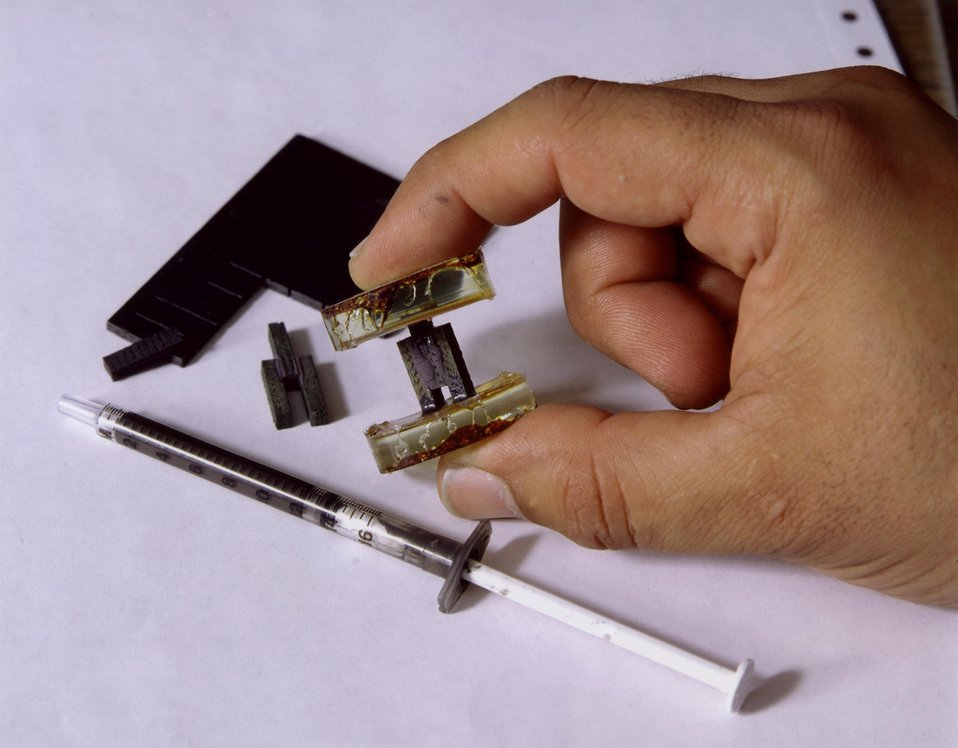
THREE PIECES OF SILICON CARBIDE COMPOSITES GLUED TOGETHER WITH PLASTIC DISCS AT THE ENDS.

THE SMALL PLATFORMS USED TO SUPPORT THE SCIENTISTS IN THE FIRST PHOTO CONSIST OF THREE PIECES OF SILICON CARBIDE COMPOSITES GLUED TOGETHER, WITH PLASTIC DISCS AT THE ENDS. SEVEN SUCH PLATFORMS WERE USED TO SUPPORT THE WEIGHT OF THE MEN SHOWN. SCIENTISTS HOPE THIS SIMPLE, EFFECTIVE GLUING METHOD WILL PROMPT INDUSTRY TO MAKE GREATER USE OF SPECIAL CERAMIC COMPOSITES IN HIGH TEMPERATURE SETTINGS. THESE COMPOSITES HAVE PROPERTIES THAT, IN SOME APPLICATIONS, MAKE THEM SUPERIOR TO STEEL AND SUPER ALLOYS BECAUSE THEY CAN WITHSTAND HIGHER TEMPERATURES, DO NOT MELT AND ARE LESS SUSCEPTIBLE TO CORROSION.